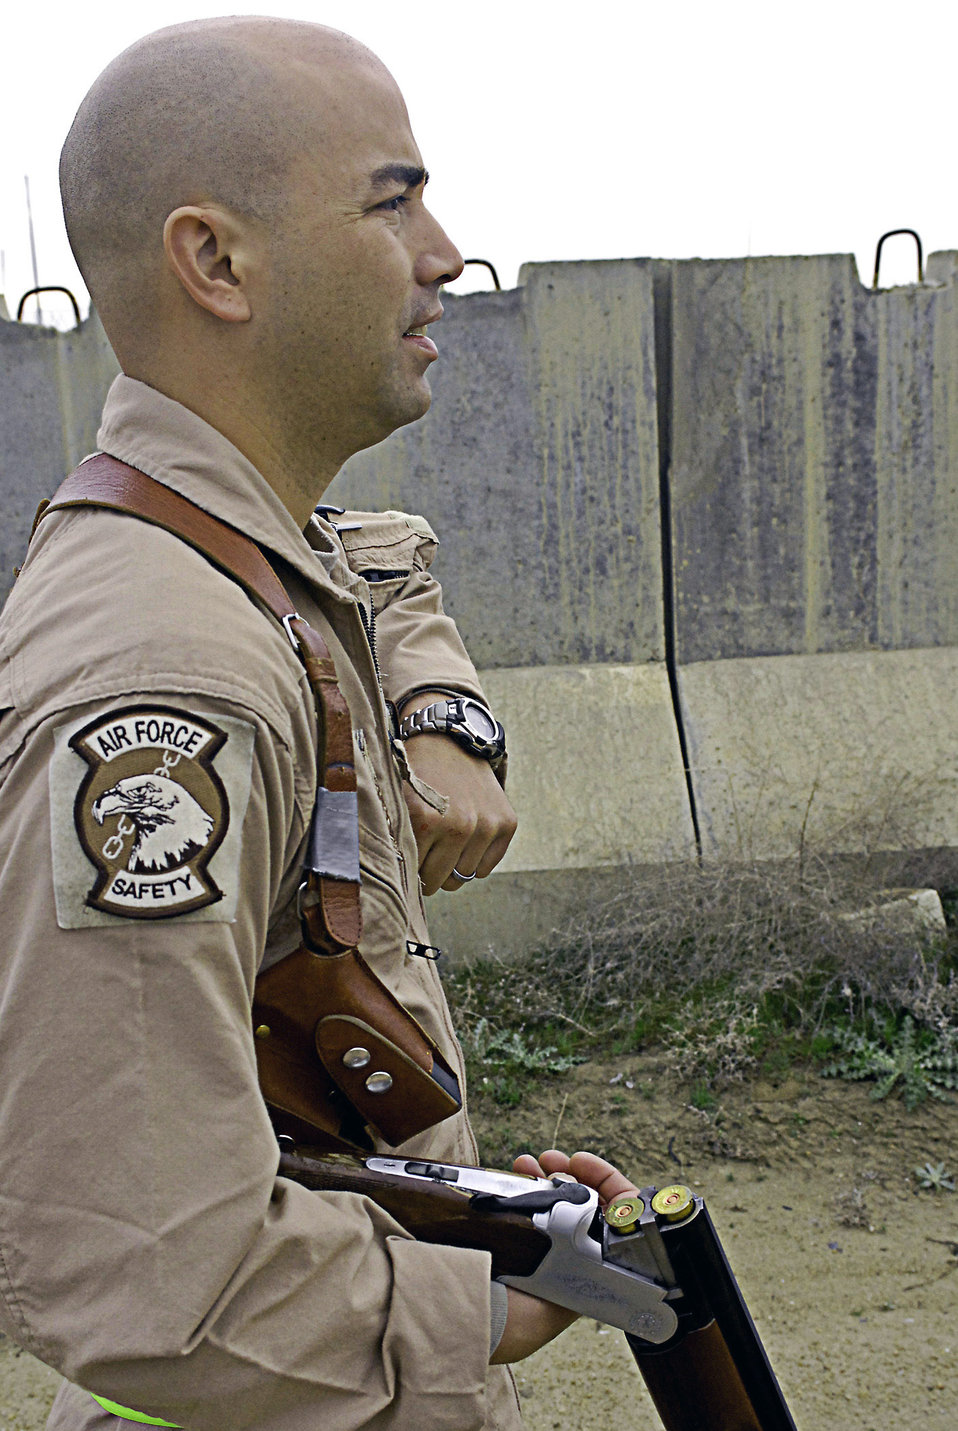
Safety experts spearhead efforts to minimize bird strikes

Tech. Sgt. Jason Stiyer loads up his shotgun as he prepares to ward off black kite birds perched near the flightline March 29 at Bagram Airfield, Afghanistan. The seven-member team of safety experts here patrol hot spots around the airfield's flightline to minimize the threat of bird strikes on the various aircraft taking off and landing. Sergeant Stiyer is a 455th Air Expeditionary Wing flight safety member.